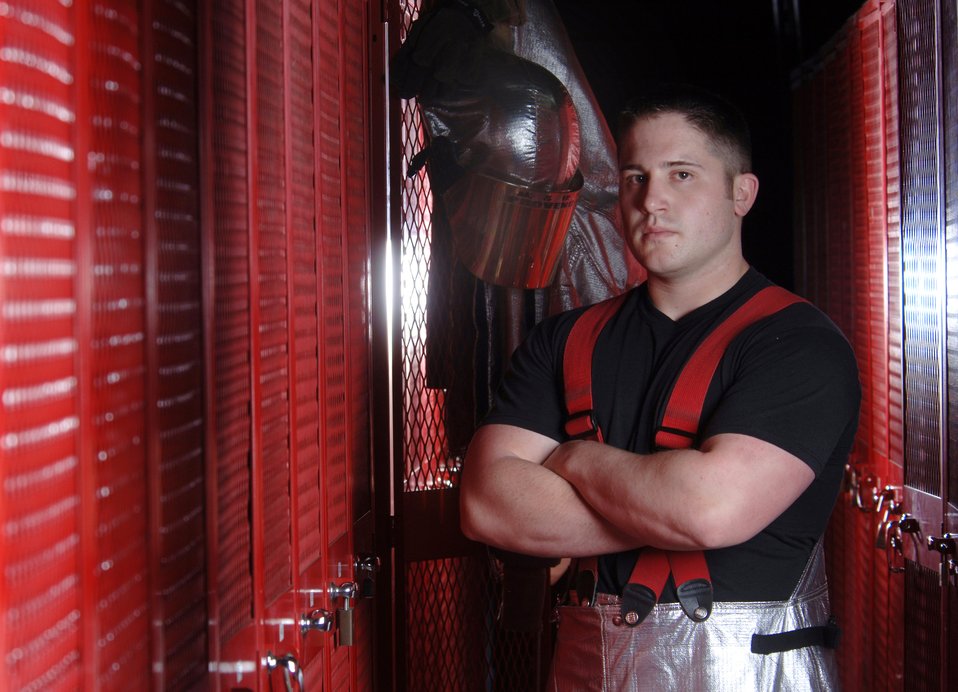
Fighting fire

Senior Airman Christopher Provencal stands in the locker room of the fire station at Yokota Air Base, Japan, on Friday, April 28, 2006. He is with the 374th Civil Engineer Squadron.